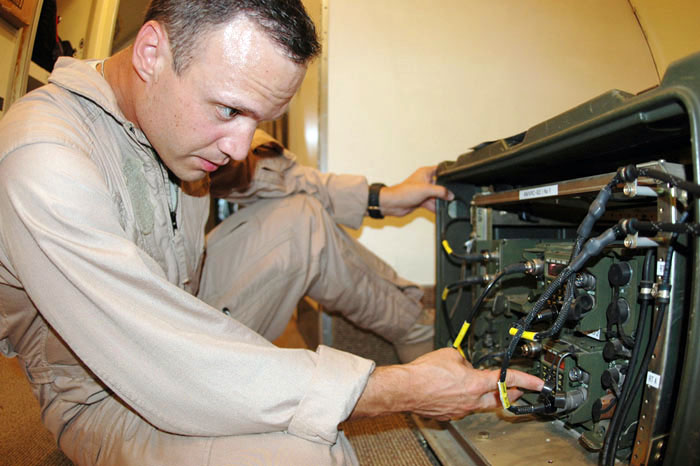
Airmen, Sailors join up in convoy relay

Navy Petty Officer 2nd Class Kasey Bruce performs routine maintenance on an E-6B Mercury prior to its flight over Iraq in July in Southwest Asia. Petty Officer Bruce, assigned to Task Force 124, is deployed here from Tinker Air Force Base, Okla.